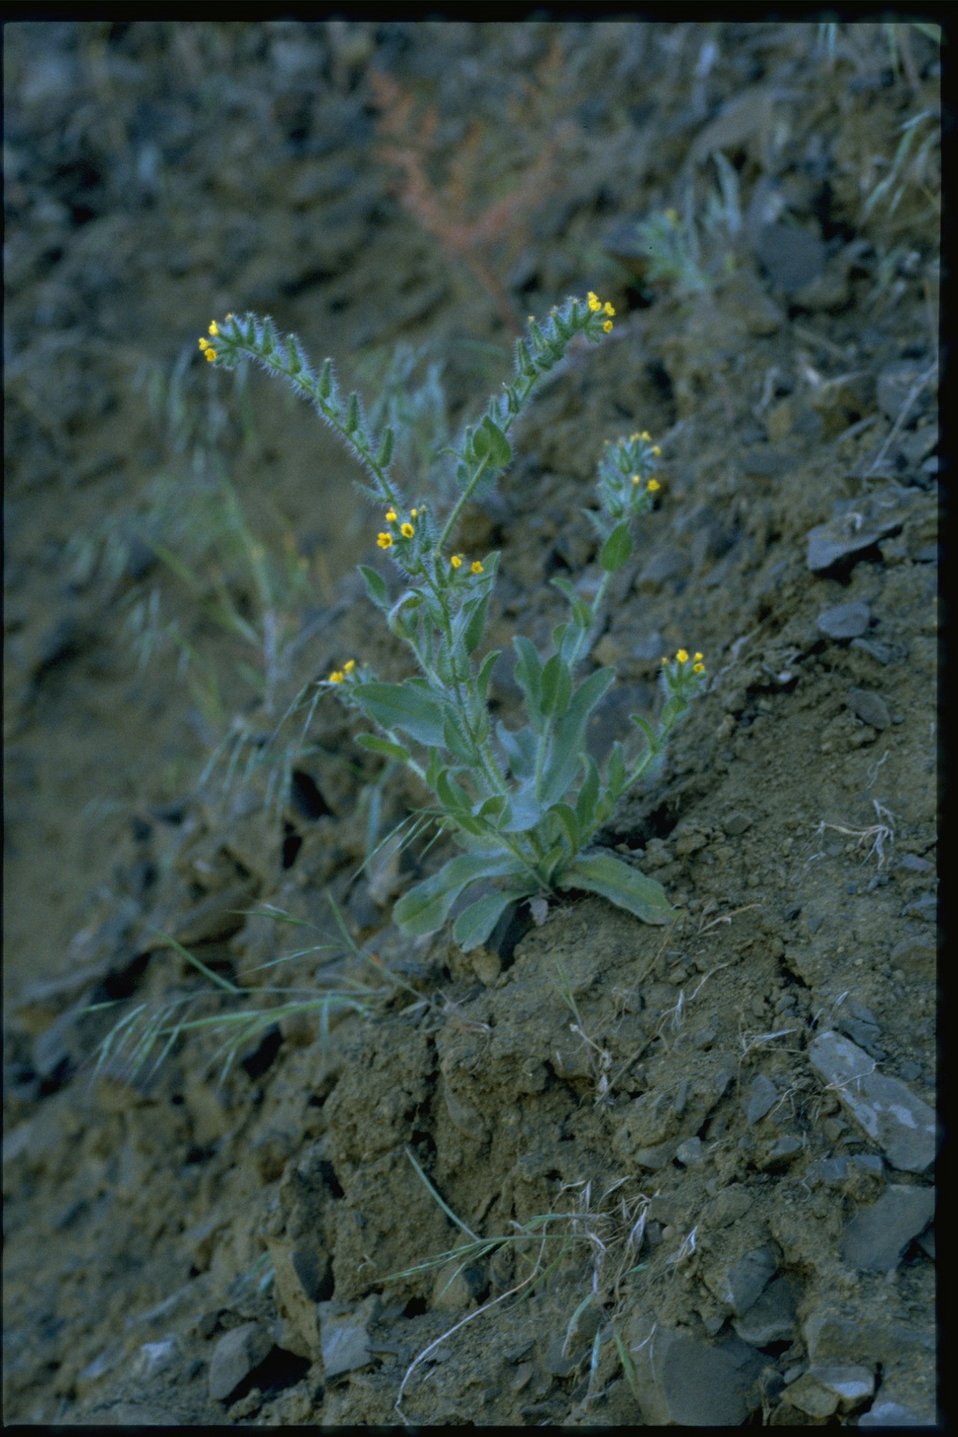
Farshot of Boraginaceae.